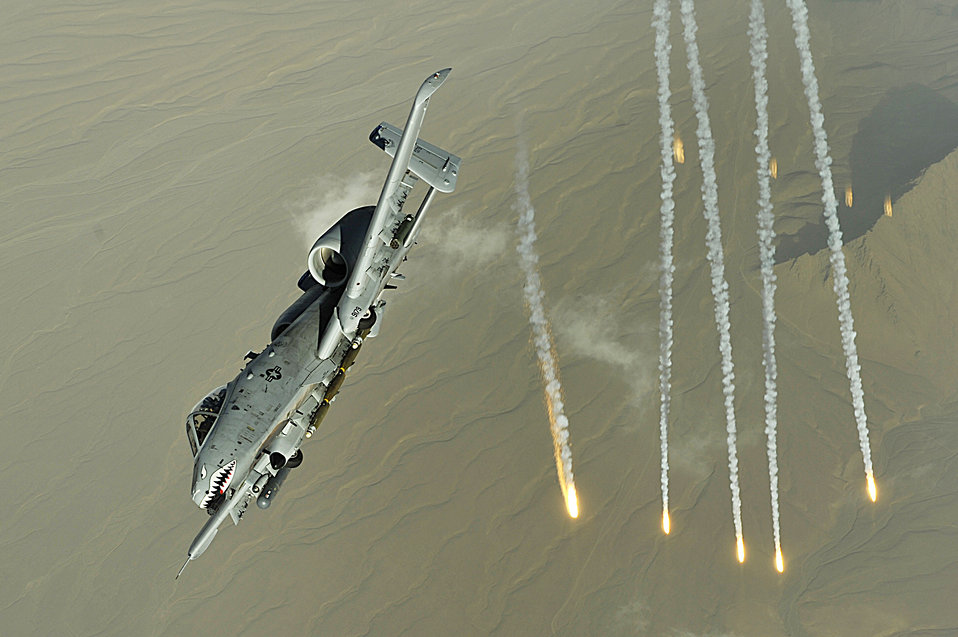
Oct. 12 airpower summary: A-10 hits target

An A-10 Thunderbolt II deploys flairs over Afghanistan Nov. 12, 2008. A-10s provide close-air support to ground troops in Afghanistan and Iraq. The A-10's excellent maneuverability at low air speeds and altitude and its highly accurate weapons delivery make it an ideal aircraft for supporting coalition operations.